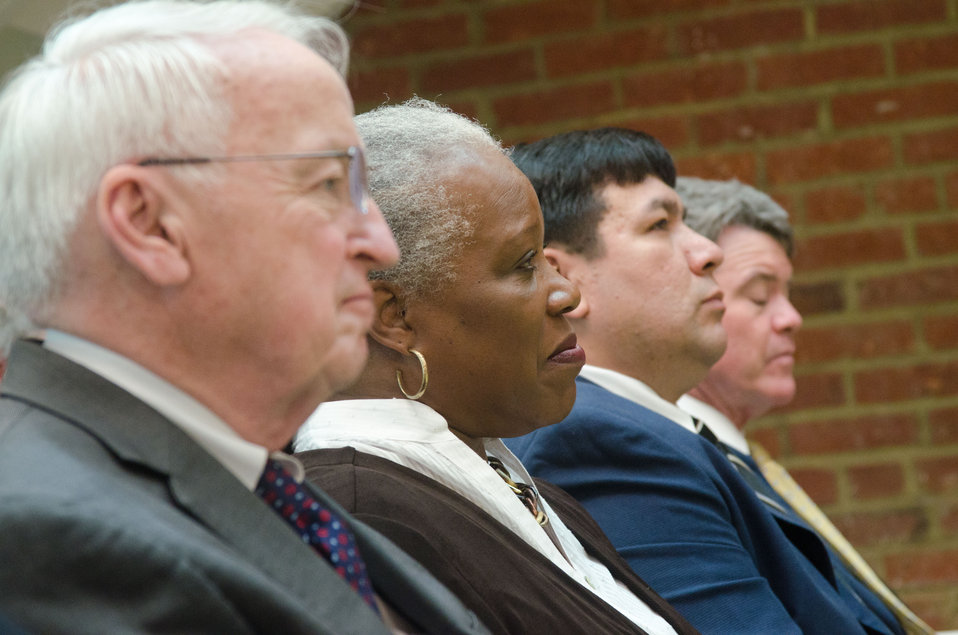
Deputy Administrator for Special Nutrition Programs in the Food and Nutrition Service Audrey Rowe (second from left) attended Agriculture Secretary Tom Vilsack’s announcement on Friday, April 29, 20ll in Washington, DC, that the U.S. Department of Agriculture and he, are committed to ending childhood hunger. Secretary Vilsack presented USDA's resources to champion the end of hunger and create innovative partnerships to address hunger, especially among children. Vilsack informed the audience that USDA has made available to individuals, groups and communities the tools and technical assistants to become champions themselves in ending childhood hunger. He shared the web address www.fns.usda.gov/ech, where people can participate in an online commitment for that cause and identified actions that can be taken. When a person registers as a Stakeholder, they, their group or community can be kept informed and have input about ending childhood hunger. A follow-on link to ' www.serve.gov"; can assist a person in finding volunteer opportunities in their area; register an unlisted program; share a story about a volunteer project or personal experience; and help get the word out about United We Serve.